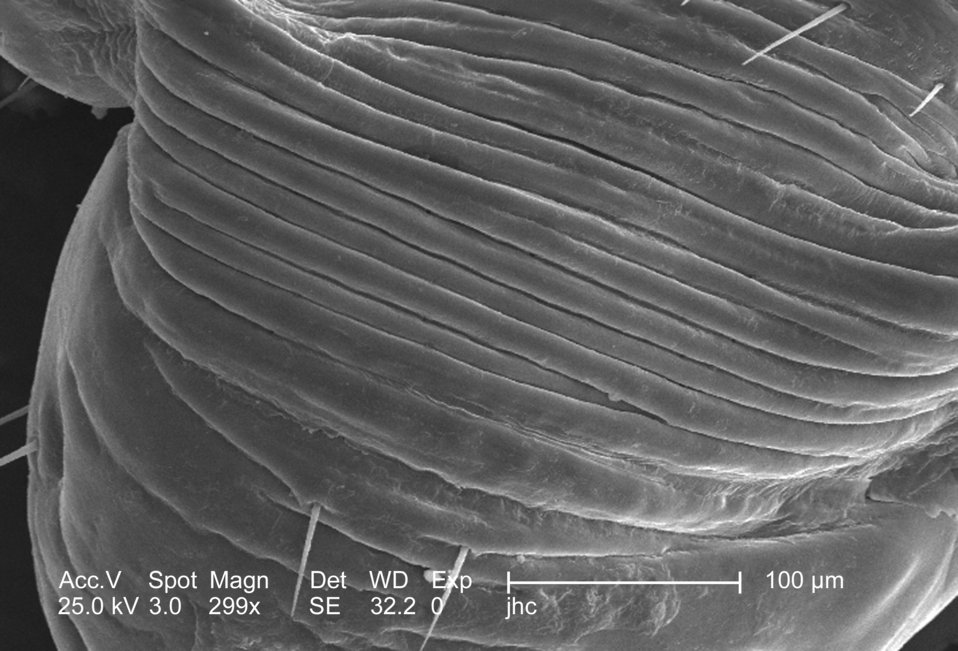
At a low magnification of 299x, this 2006 scanning electron micrograph (SEM) depicted an enlarged view of the chitinous, exoskeletal surface of a male louse, Pediculus humanus var. corporis. In this particular view, the exoskeleton seems to be configured in 'accordion-like' convolutions, which is visible with the naked eye on the insect's abdomen. Chitin is a molecule made up of bound units of acetylglucosamine, which is joined in such a way as to allow for increased points at which hydrogen bonding can occur. In this way chitin provides increased strength, and durability as an exoskeletal foundation. Note the sparse amount of 'setae', or sensorial 'hairs' in this area of the abdominal surface.